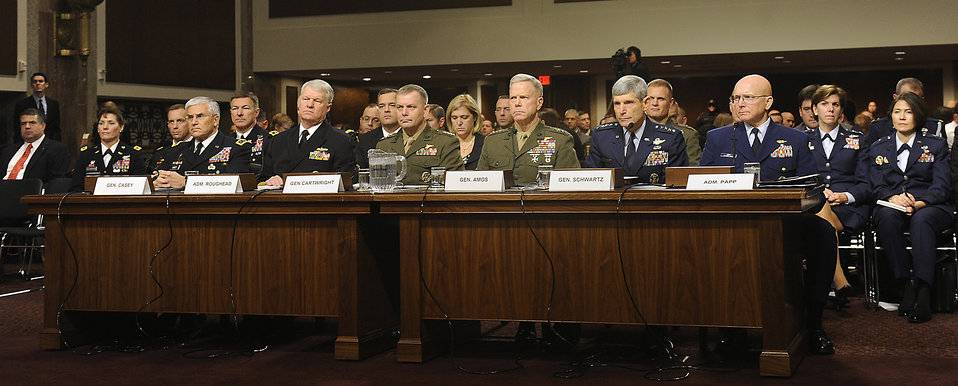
HASC Hearing on Don't Ask, Don't Tell

Air Force Chief of Staff Gen. Norton Schwartz and other senior military leaders testify before the Senate Armed Services Committee Dec. 3, 2010, in Washington, D.C. General Schwartz, his fellow service chiefs and the vice chairman of the Joint Chiefs of Staff testified on the recently released Comprehensive Review Working Group report, which addresses the potential repeal of the